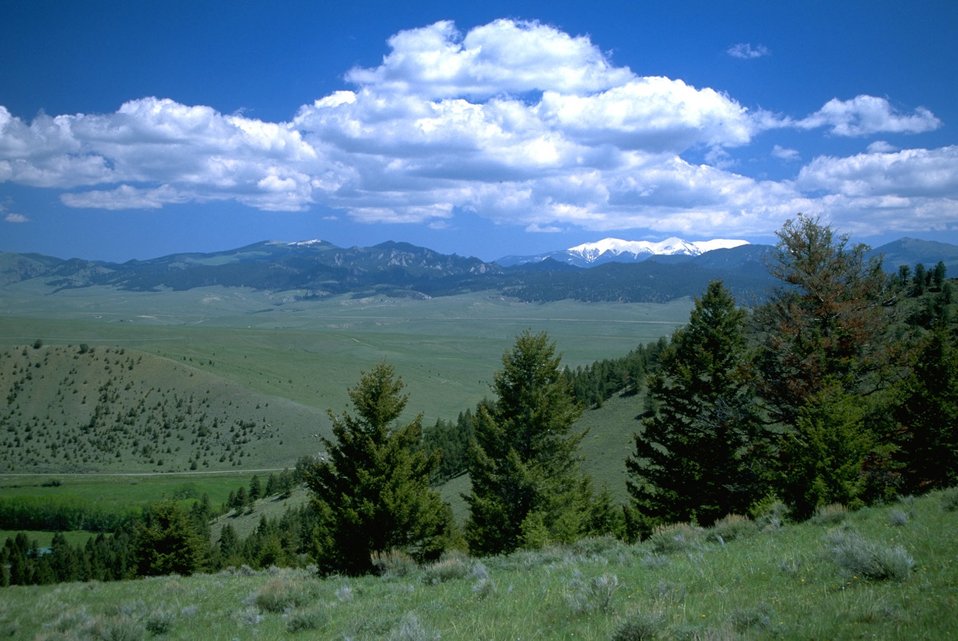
Fir trees looking down on a green valley and snowy mountains with interesting cloud formations above